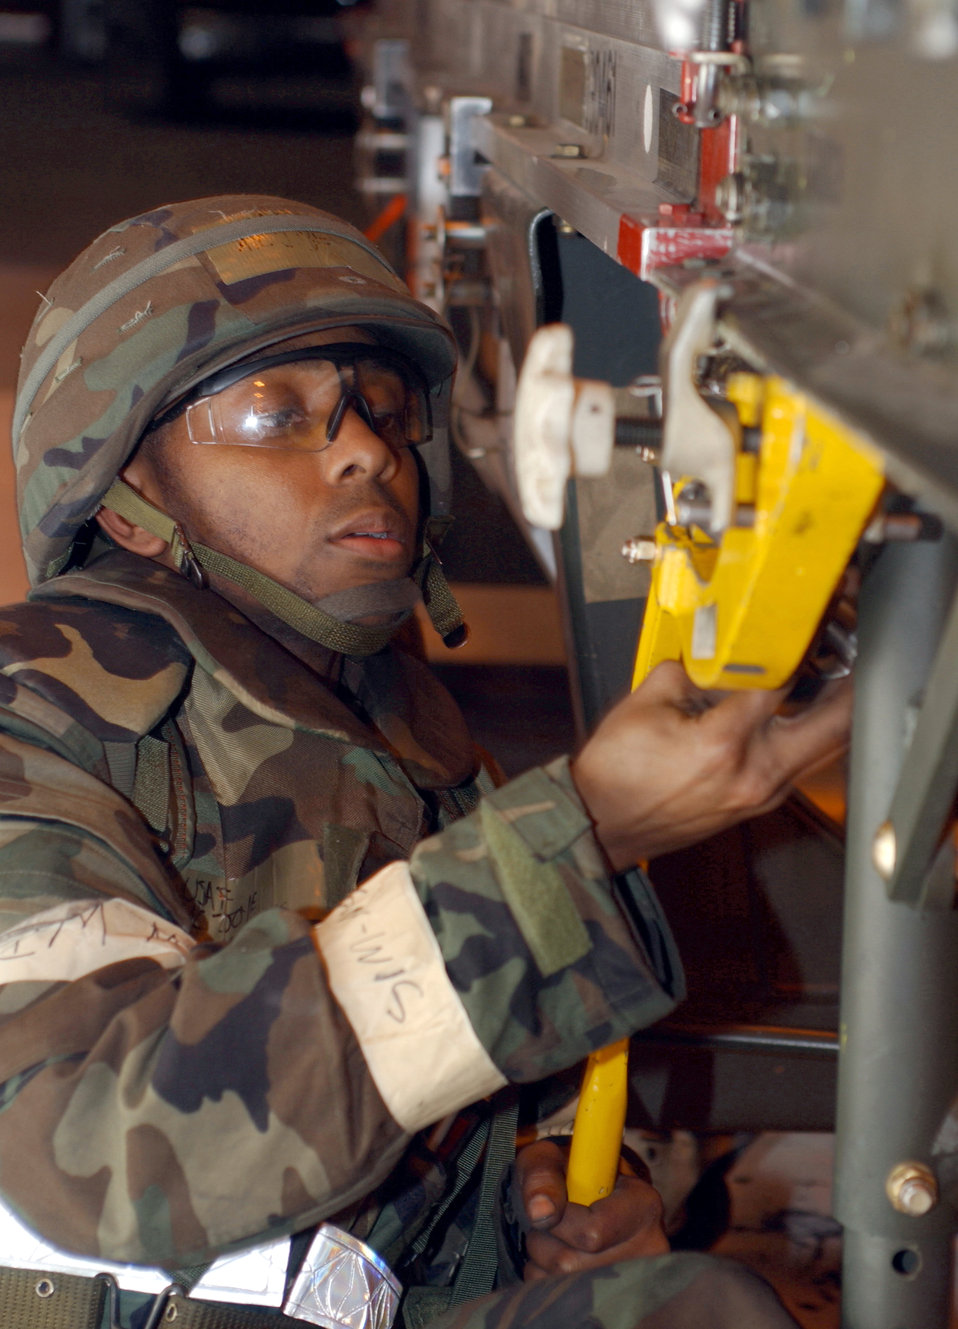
Keeping them operating

EIELSON AIR BASE, Alaska -- Airman 1st Class Marcus Joyce conducts mission aircraft operating tasks here during an operational readiness inspection April 27. Airman Joyce is a jet engine mechanic with the 354th Fighter Wing.